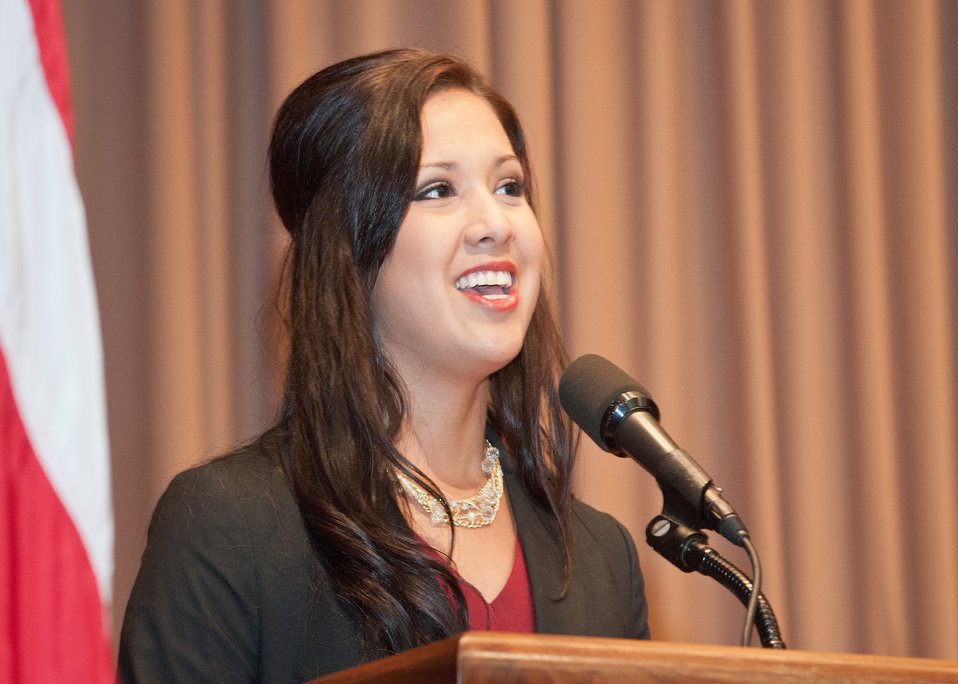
Morgan Two Crow, Oklahoma State University, Stillwater, Oklahoma explained her knowledge and experience as a member of the Future Farmer’s of America during the United States Department of Agriculture, Native American Indian Heritage Month celebration in Washington, DC, on Wednesday, November 16, 2011, The theme of this year’s event is, “Native Youth: Cultivating the Future.”